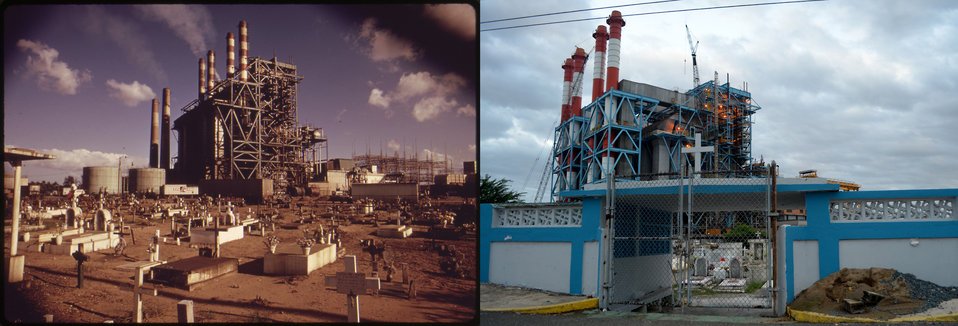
Old and New Stacks, San Juan Puerto Rico

Then: 'Palo Seco Electric Power Plant Across the Bay from San Juan, Puerto Rico,' February, 1973 photo by John Vachon for Documerica.

Now: 'Palo Seco Power Plant, San Juan, PR,' December, 2012 J. Maldonado for State of the Environment.